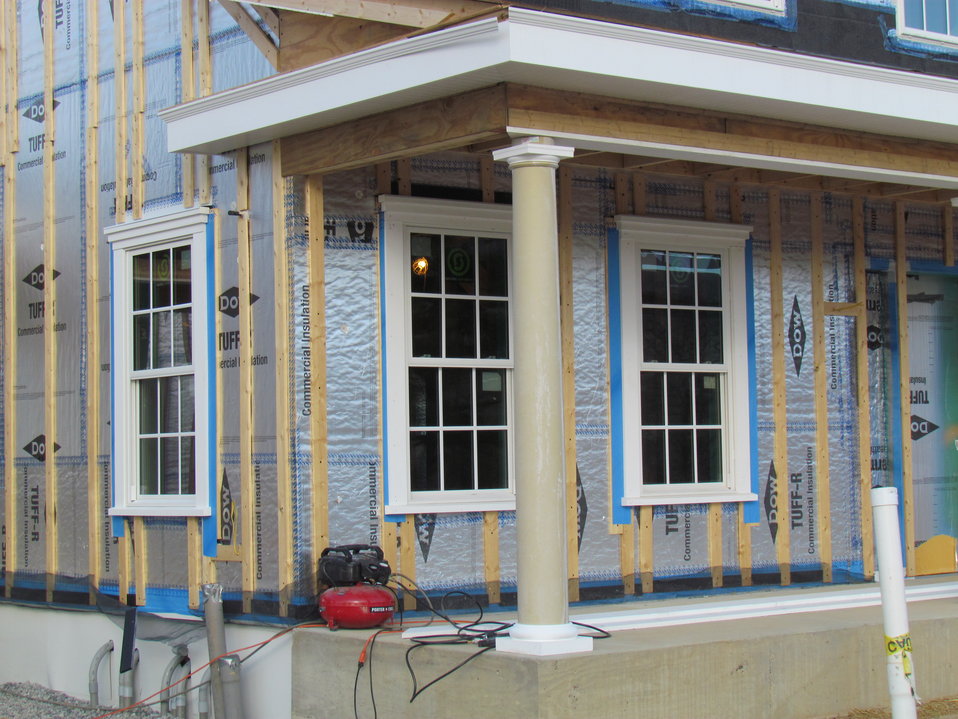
Net-Zero Energy Residential Test Facility – Construction photo showing southwest corner detail of front porch. Permanent columns are in place and trim work is being installed.